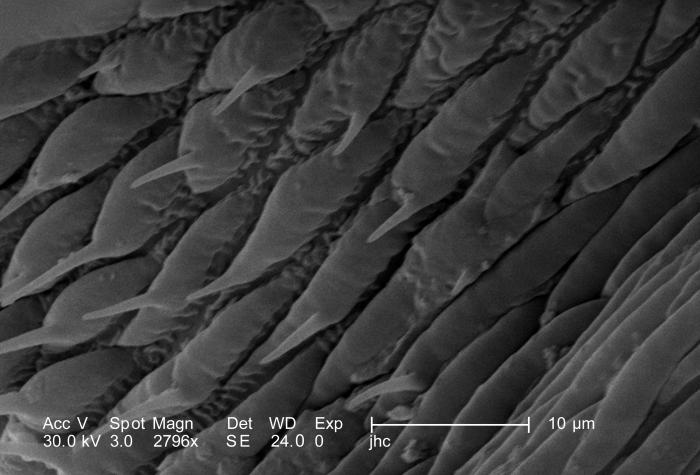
This scanning electron micrograph (SEM) is the fifth in a series of five PHIL images, 10106, 10107, 10108, 10109, and 10110, depicting the distalmost exoskeletal morphology found on one of the six legs of an unidentified hornet found in the suburbs of Decatur, Georgia. Under a magnification of 2796X, what this SEM reveals is the anatomical configuration of what is termed the leg's 'pretarsus' or 'claw', but in particular the 'arolium', which is centered between the two distal claws.The insect leg is usually composed of six segments: the proximal 'coxa', which attaches the leg to the thorax, followed distally by the leg's trochanter, femur, tibia, tarsus, and pretarsus, which in some insects, as is the case of this hornet, is in the form of a 'claw'.